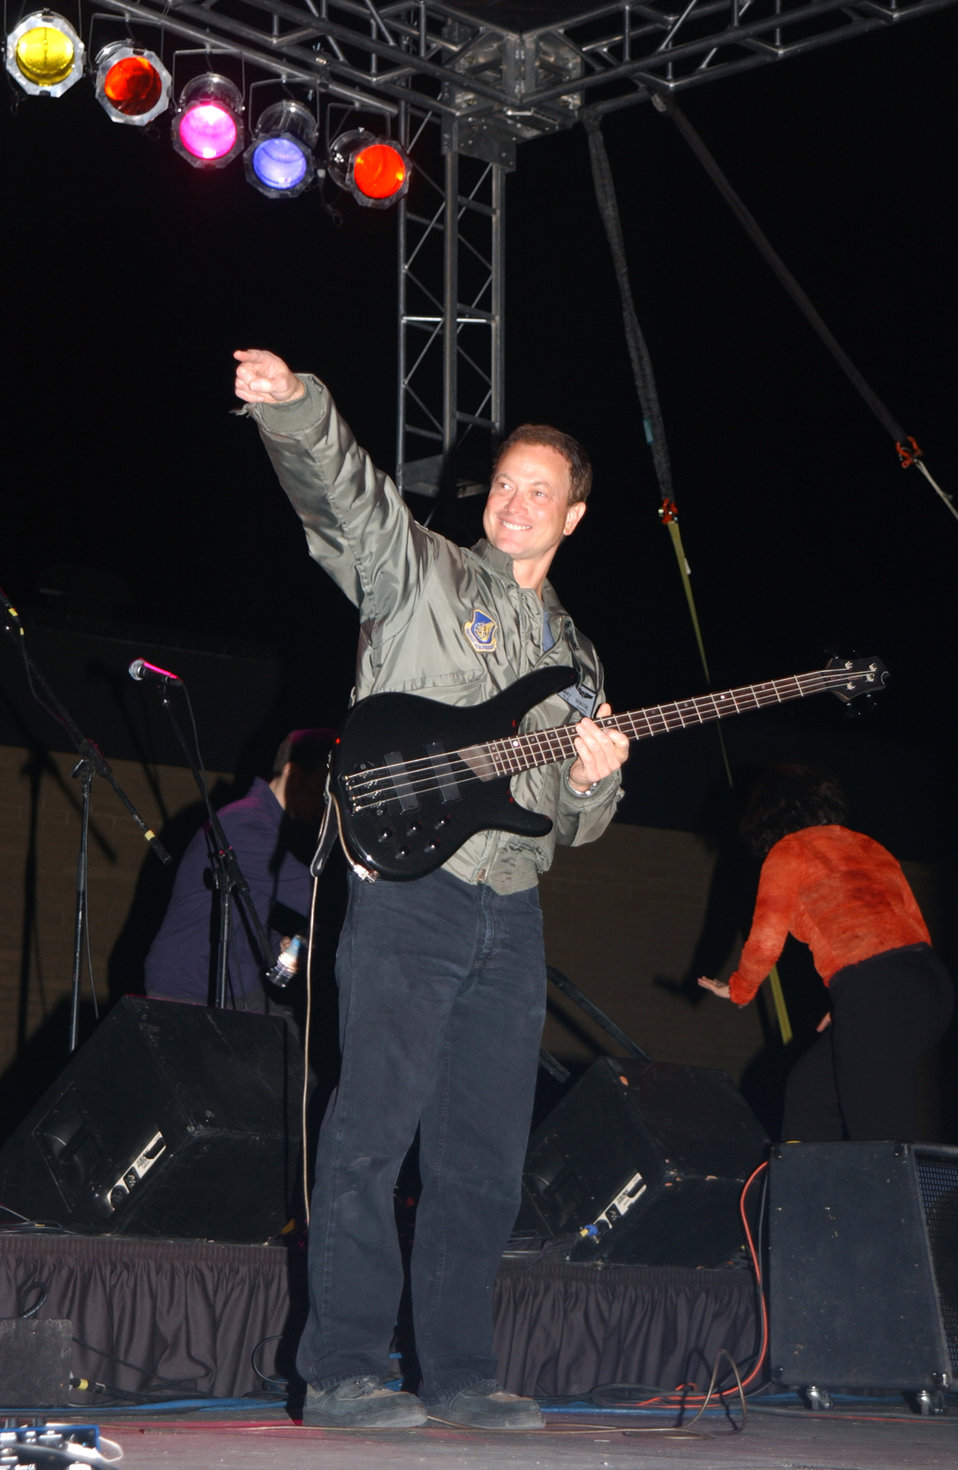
Gary Sinise visits Luke, performs for troops

LUKE AIR FORCE BASE, Ariz. -- Gary Sinise and the Lt. Dan Band performed here Oct. 30. Mr. Sinise's portrayal of Lt. Dan Taylor in the movie